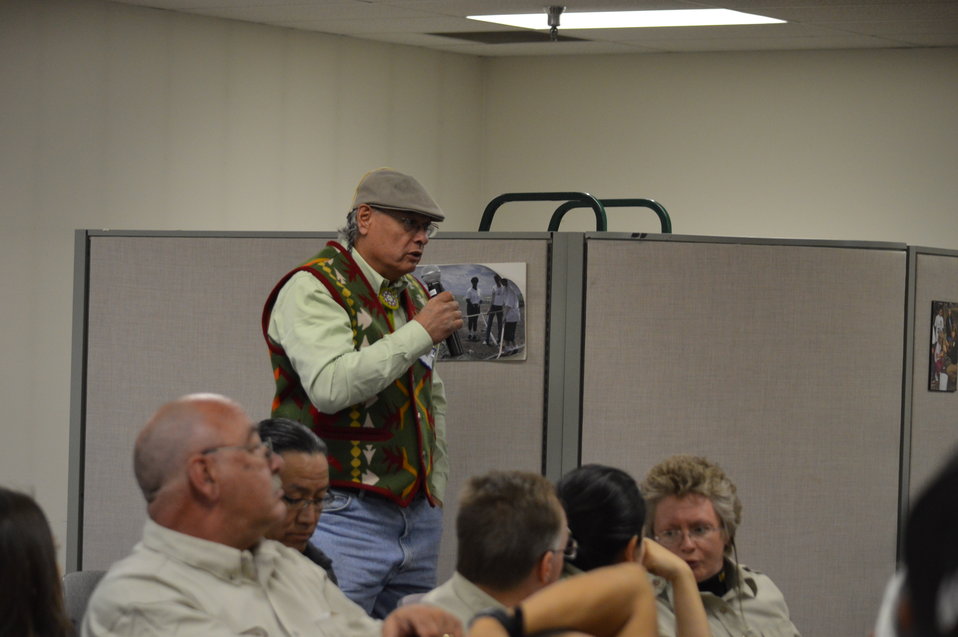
Discussion

Questions and comments are raised at the Eagle Summit III in Denver, Colorado on March 20, 2014 at the Rocky Mountain Arsenal National Wildlife Refuge.